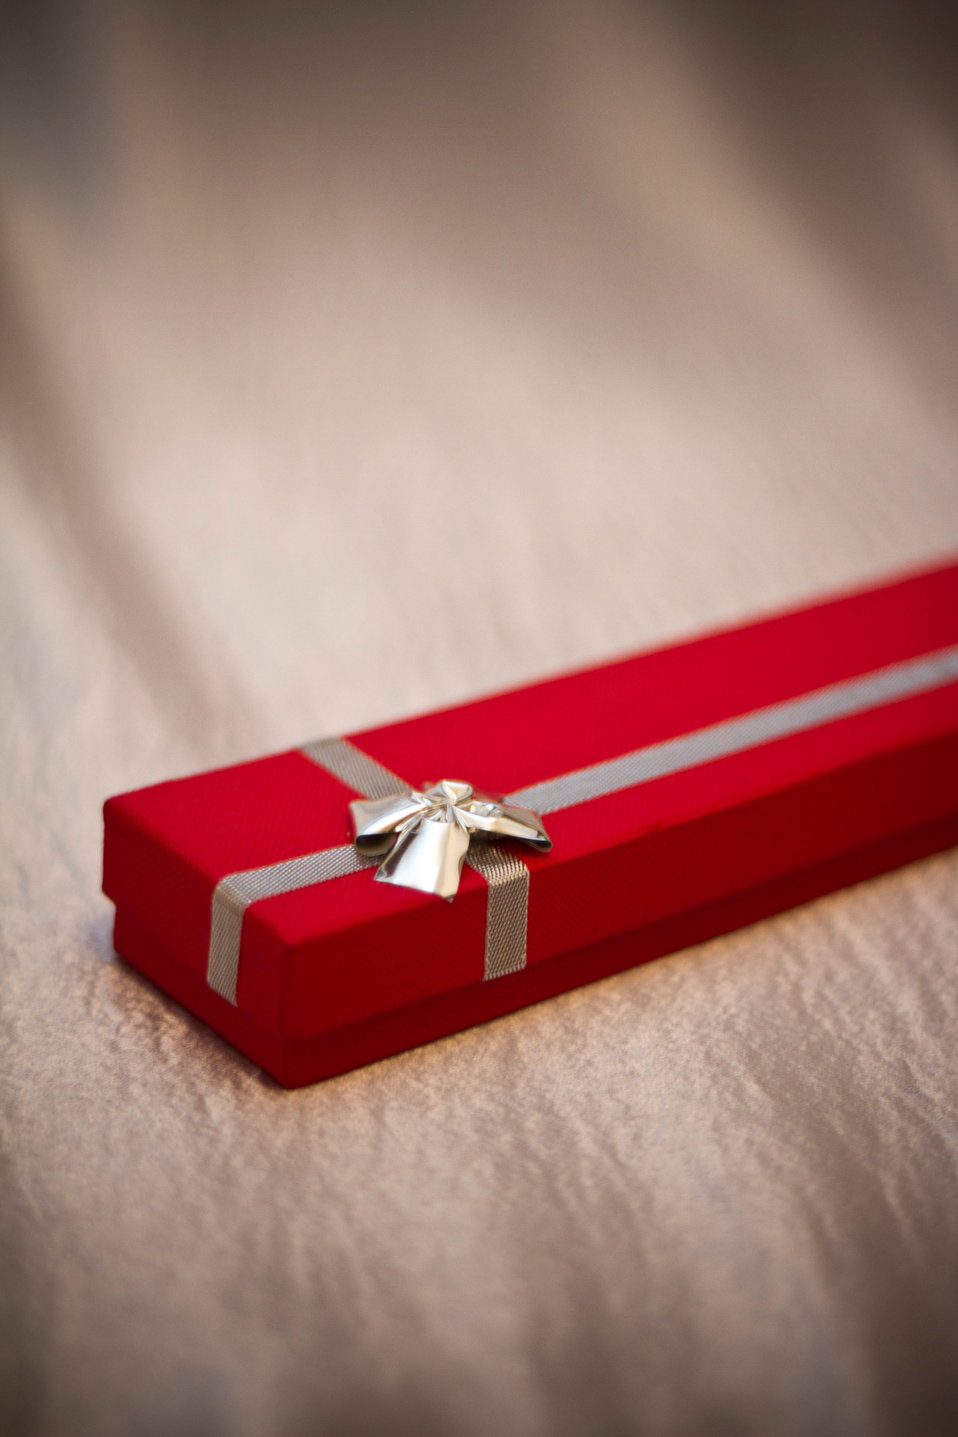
Present in the gift box.